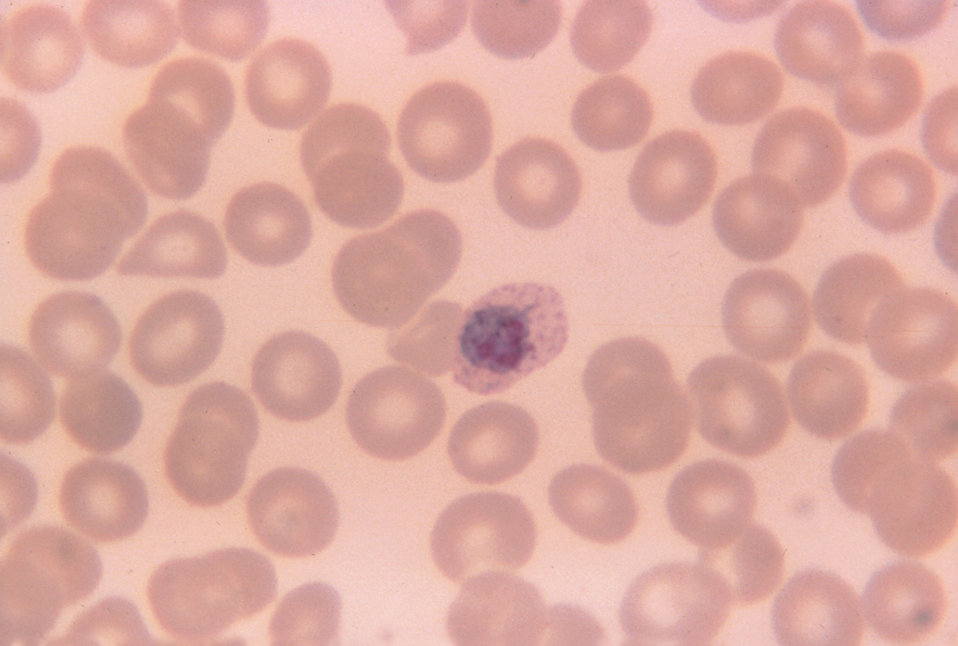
This thin film shows an immature schizont of the parasite P. ovale along with four chromatin masses, and rounded RBCs.